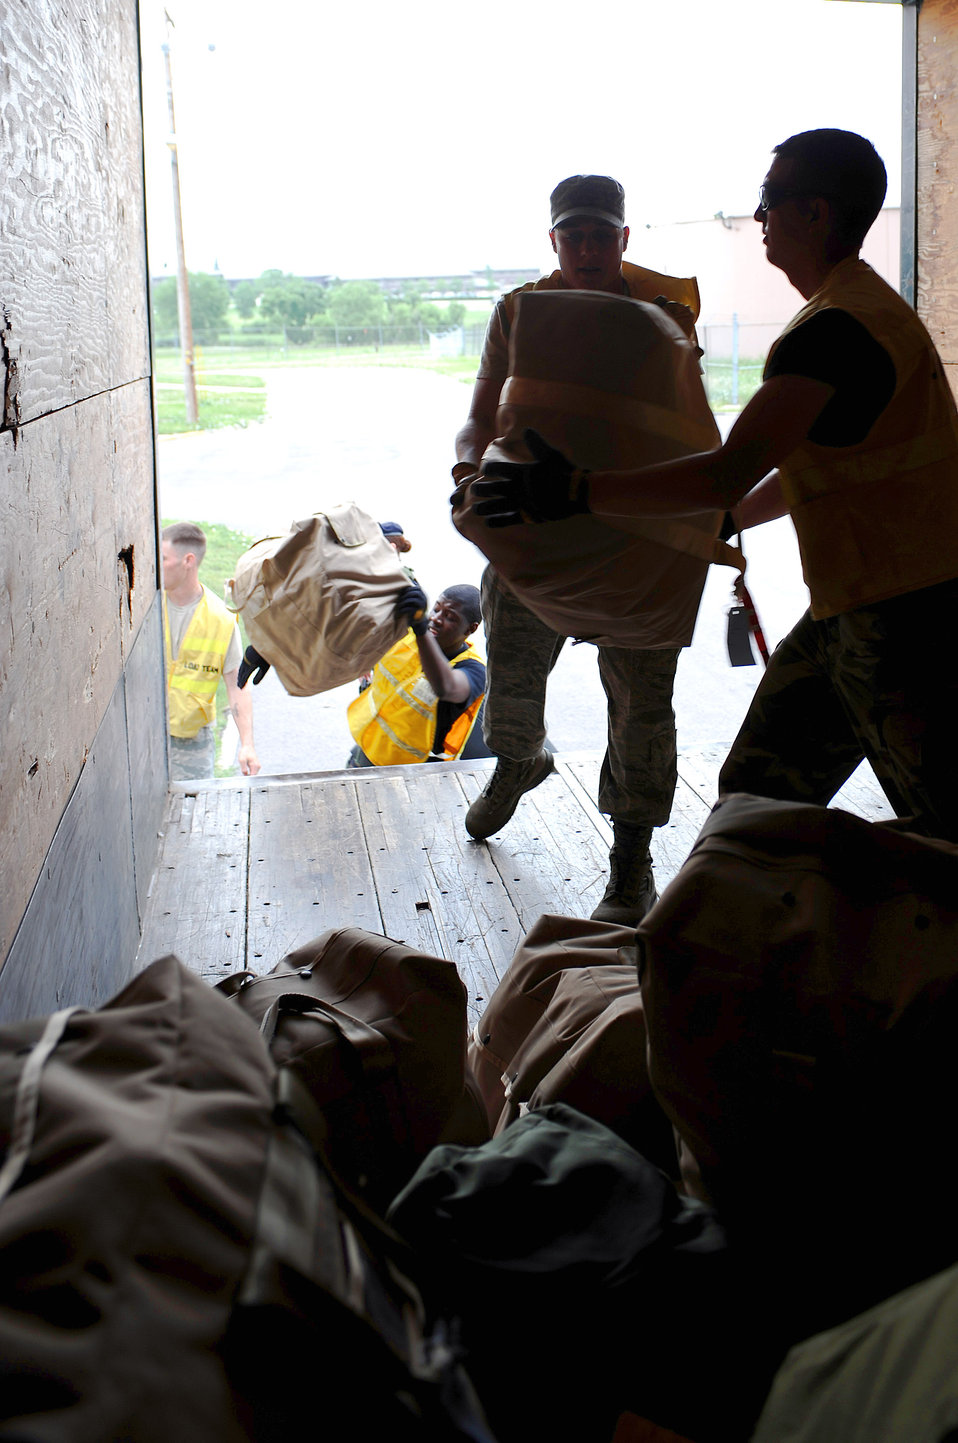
Parting is such sweet sorrow

Staff Sgt. Jerry Simmons (right) takes a mobility bag from Senior Airman Christopher Bohach while loading personal and mobility bags of deploying personnel July 22 at Ellsworth Air Force Base, S.D. More than 200 Ellsworth AFB Airmen deployed in support of operations Iraqi Freedom and Enduring Freedom. Sergeant Simmons is a 28th Civil Engineer Squadron electrical systems craftsman, and Airman Bohach is a 28th CES heating, ventilation, refrigeration and air conditioning journeyman.